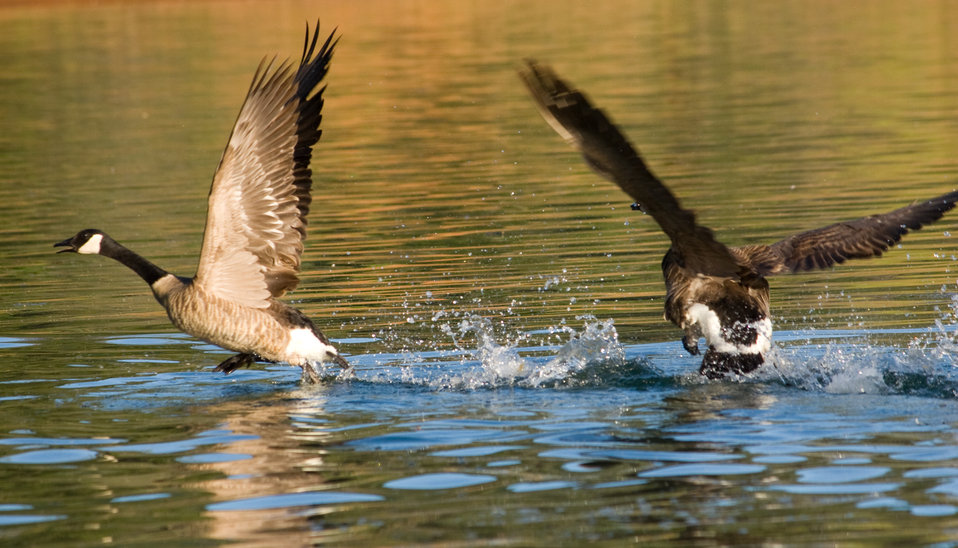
Englebright Lake

Canadian geese take to flight in the early morning light on Englebright Lake near Marysville, Calif., shown April 22, 2009. Formed by Englebright Dam the lake is 9 miles long with a surface area of 815 acres, an elevation of 527 feet and 24 miles of shoreline. Completed by the U.S. Army Corps of Engineers Sacramento District in 1941, the dam was authorized by Congress for the storage of hydraulic gold mining debris on the Yuba River. The concrete arch dam spans 1,142 feet across and is 260 feet high. The lake and dam are managed by the Sacramento District.